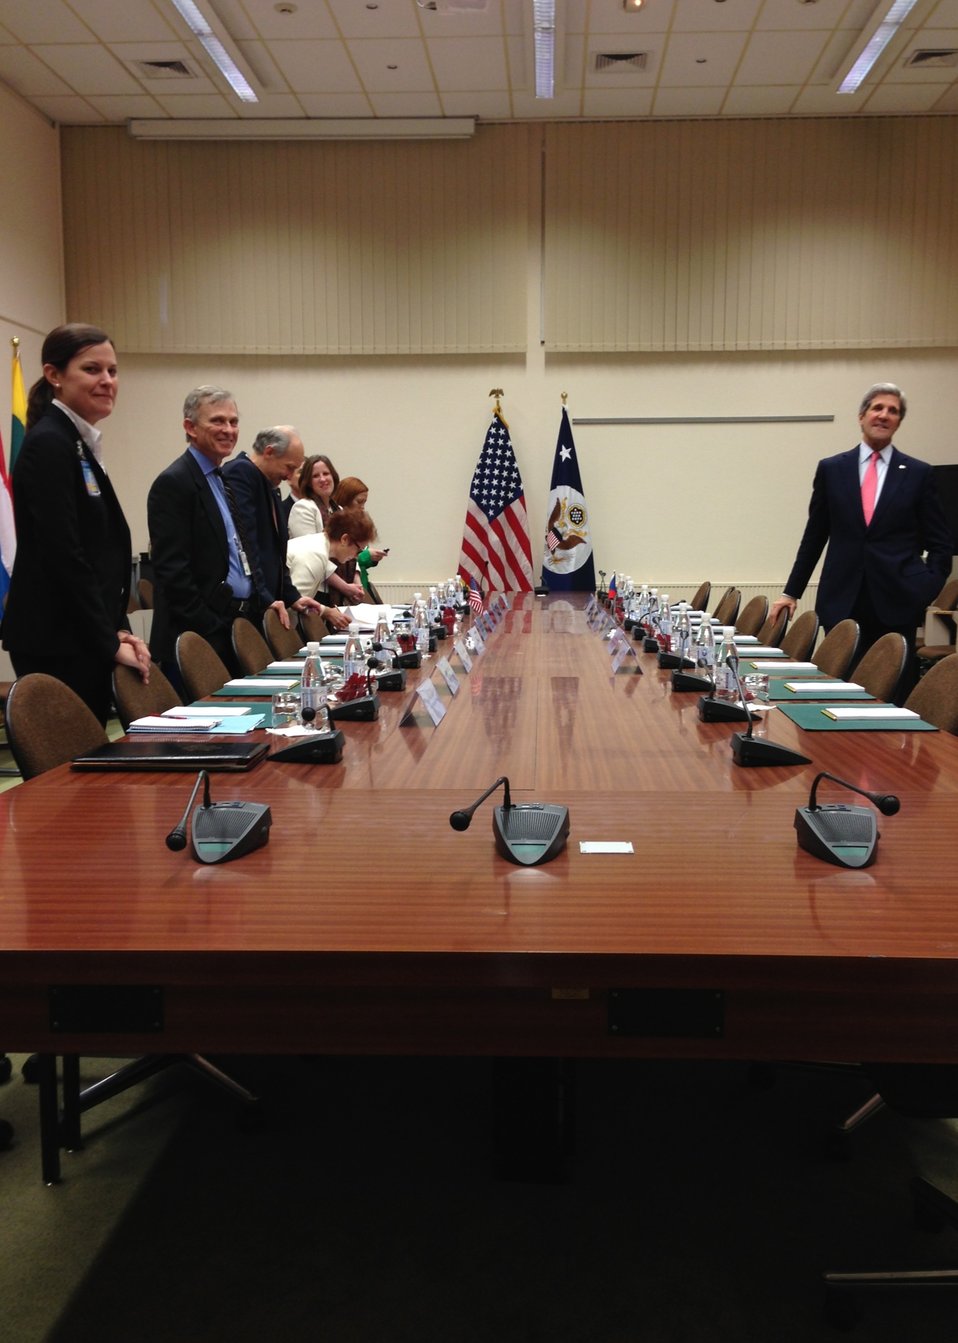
Secretary Kerry and Staff Await the Start of a Meeting With Czech Foreign Minister Schwarzenberg

U.S. Secretary of State John Kerry and his staff await the start of a bilateral meeting on Tuesday with Czech Foreign Minister Karel Schwarzenberg at NATO headquarters in Brussels, Belgium, on April 23, 2013.